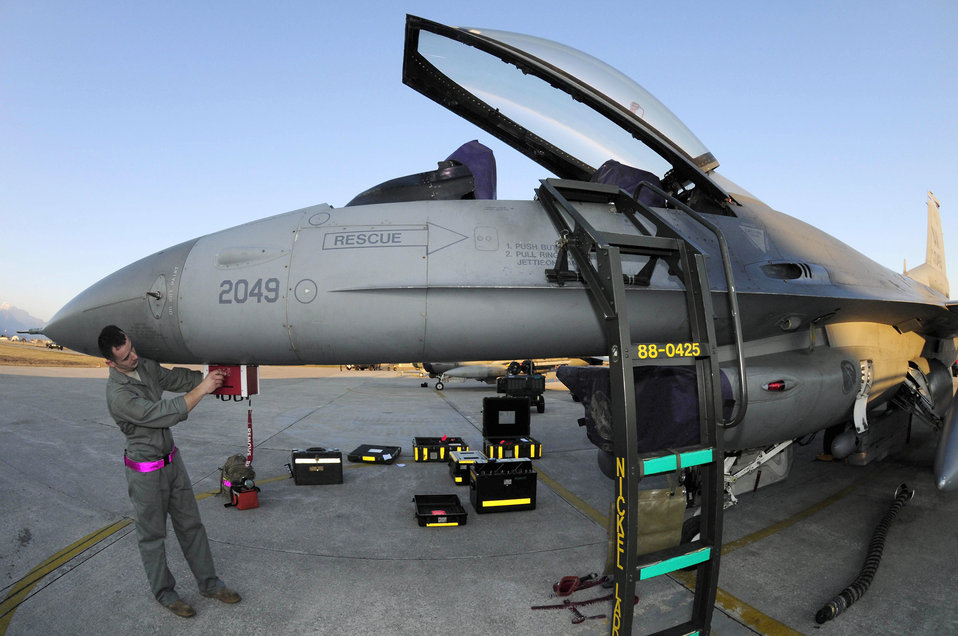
Odyssey Dawn

Staff Sgt. Bryan Holloway, 510th Aircraft Maintenance Unit avionics craftsman, performs scheduled radar threat warning maintenance on an F-16 Fighting Falcon March 21, 2011, at Aviano Air Base, Italy. The aircraft will deploy in support of Operation Odyssey Dawn. Joint Task Force Odyssey Dawn is the U.S. Africa Command task force established to support the larger international response to the unrest in Libya. A broad coalition of nations are partnering to enforce U.N. Security Council Resolution (UNSCR) 1973, which authorizes all necessary means to protect civilians in Libya under threat of attack by Qadhafi regime forces. JTF Odyssey Dawn is commanded by Admiral Samuel J. Locklear, III.